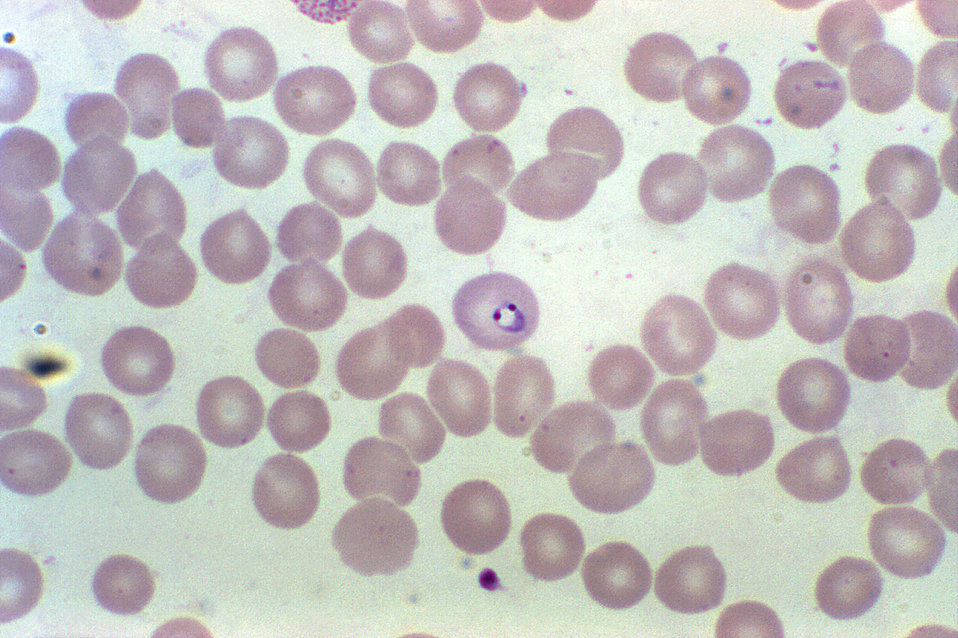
A photomicrograph of a blood smear revealing an erythrocyte containing a Plasmodium vivax parasite, magnified 1000X.